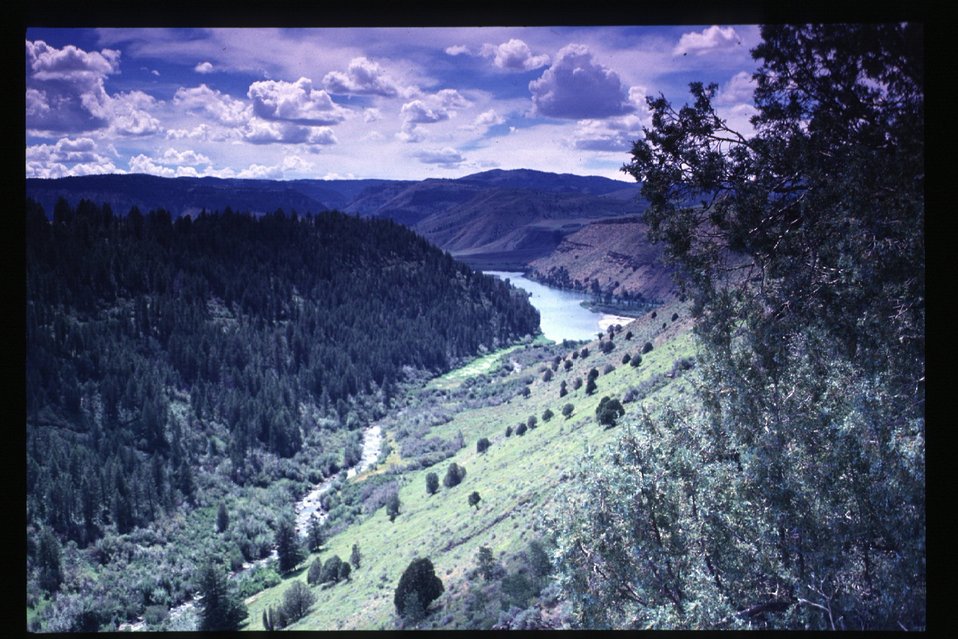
Scenic South Fork of Boise River Four Rivers Field Office LSRD Lower Snake River District